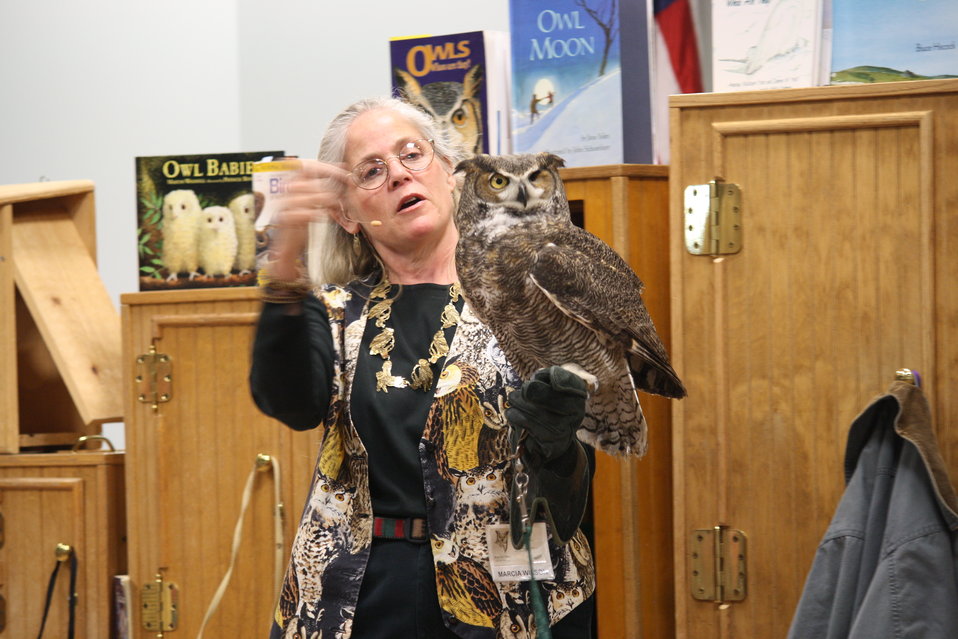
One-eyed Great Horned Owl

Bird show at the USFWS fishing derby on May 7th.